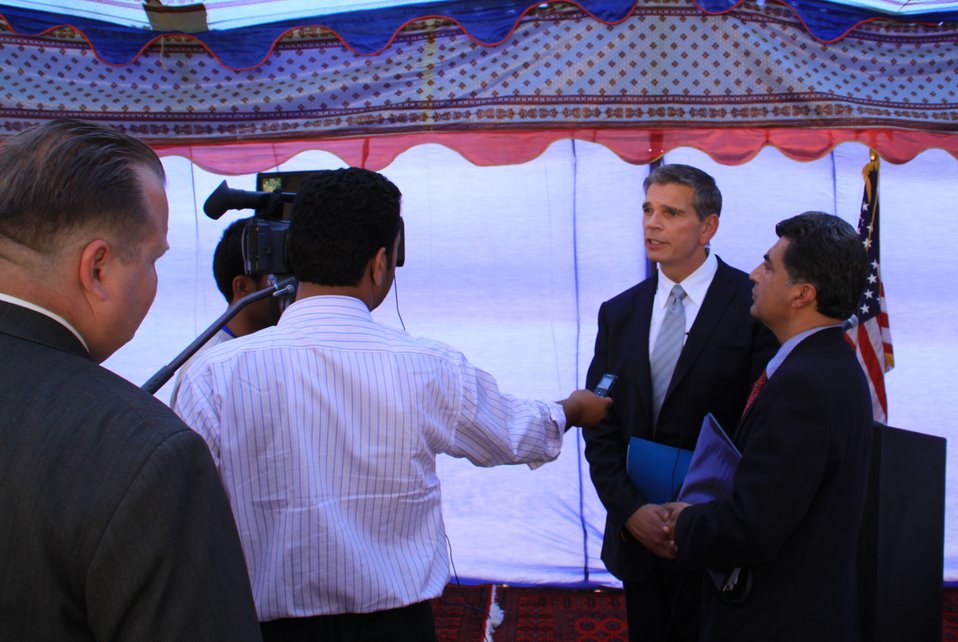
105 MW Tarakhil Power Plant Handover